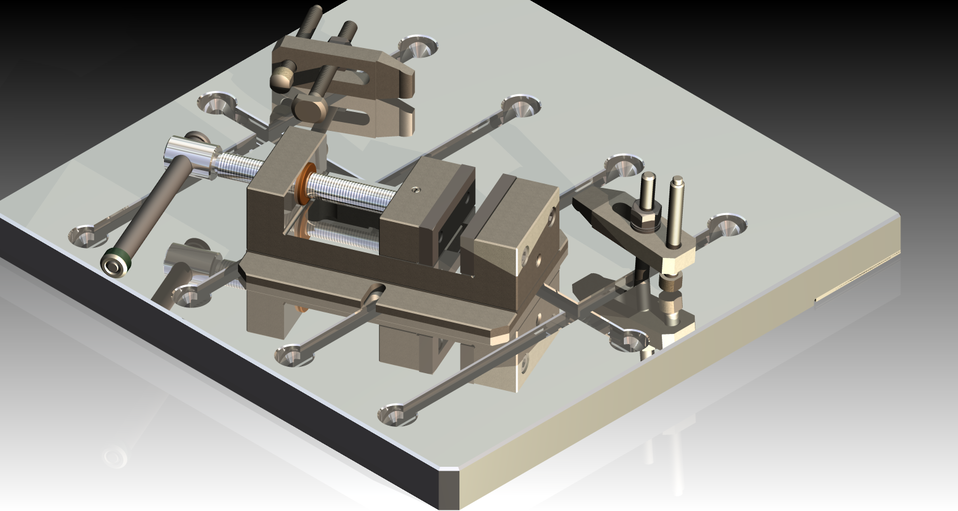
fitter's vice